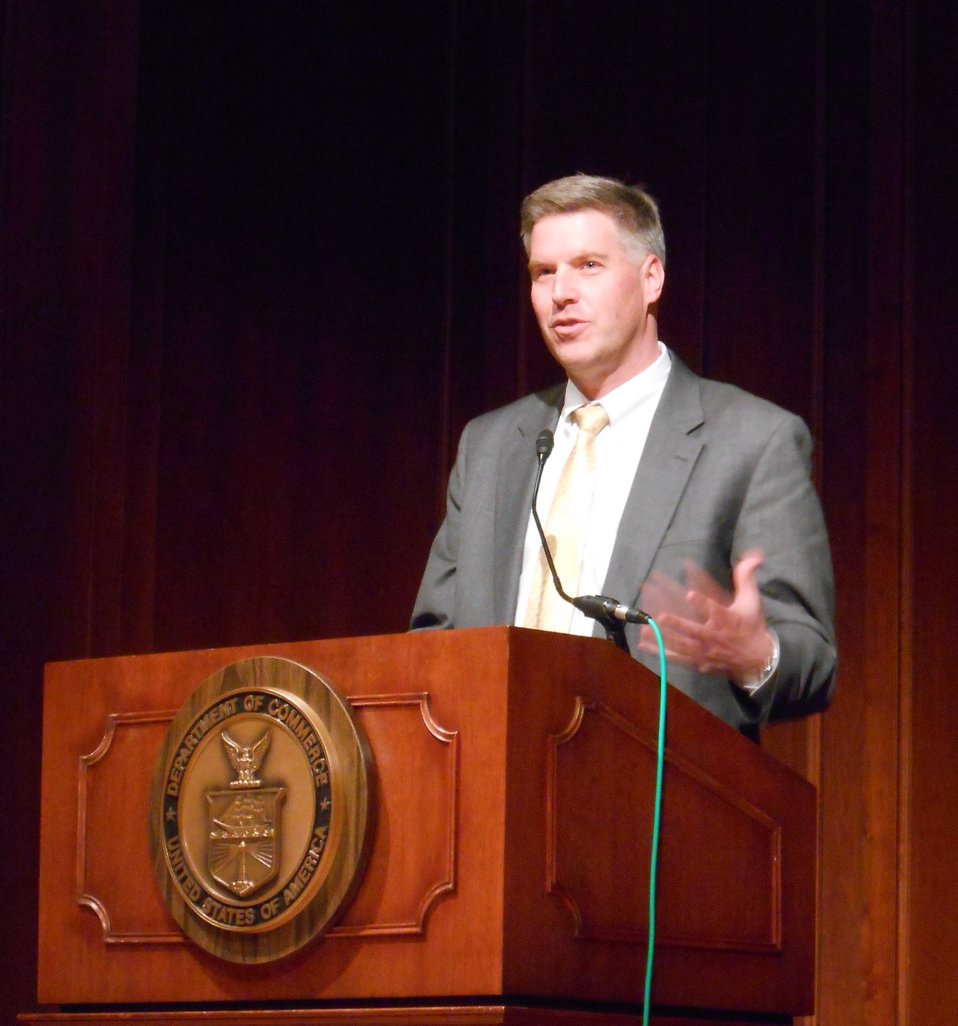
Department of Commerce 2013 Presidential Inauguration Open House

NIST Director Dr. Patrick Gallagher leads off a panel discussion on “Technology, Innovation and Job Creation” where key agencies from the U.S. Department of Commerce (the National Telecommunications and Information Administration, the National Institute of Standards and Technology and the U.S. Patent and Trademark Office) highlight key activities that help bolster the economy.

Credit: NIST/Allan Eustis

Event: Department of Commerce 2013 Presidential Inauguration Open House: Panel Discussions held at the Herbert C Hoover Auditorium in Washington DC.